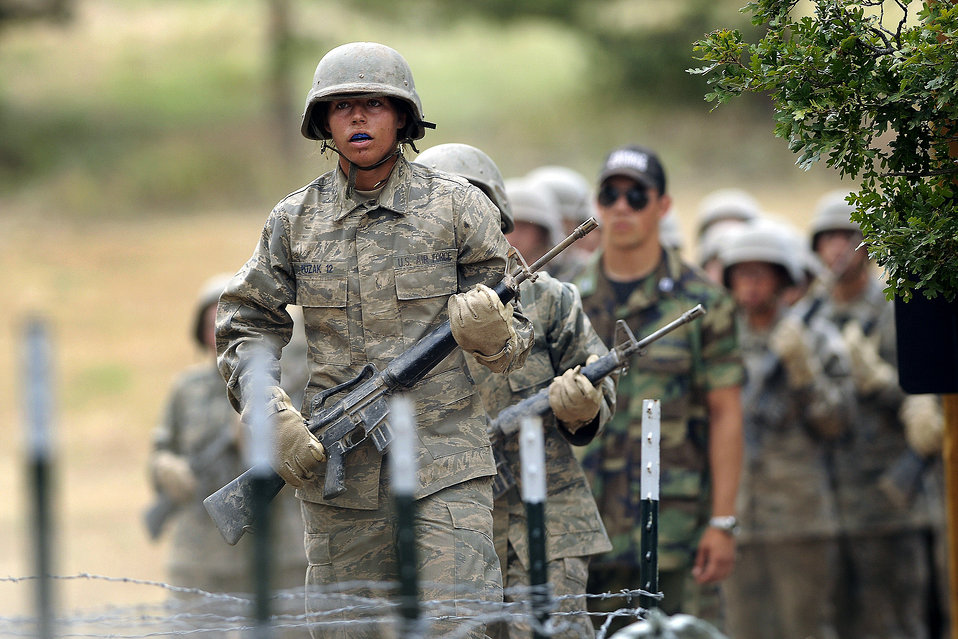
Assault course

U.S. Air Force Academy basic cadet Stephanie Puzak prepares to attack the low crawl obstacle on the assault course during basic cadet training in the Jacks Valley training area July 25.